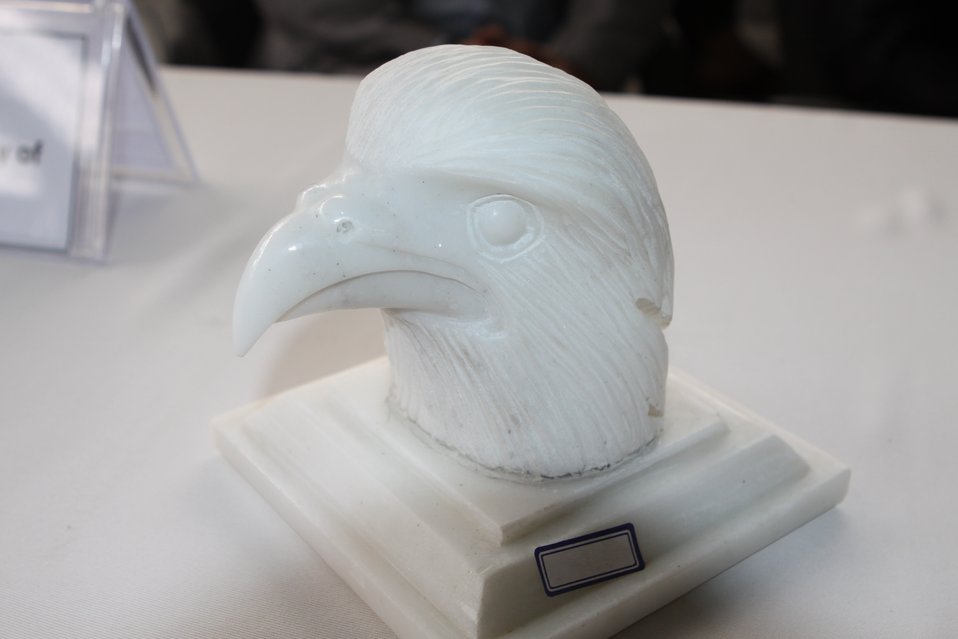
100525 Hirat Marble Conference 163